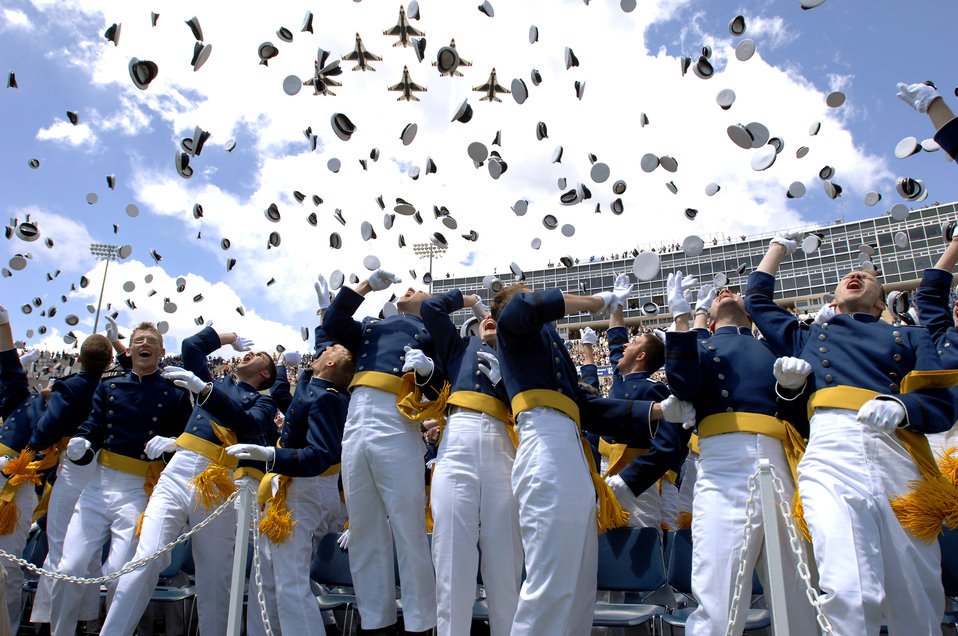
'Stay true' SECDEF tells Air Force Academy grads

The U.S. Air Force Thunderbirds fly over the 2007 U.S. Air Force Academy graduation ceremony May 30 in Colorado Springs, Colo.